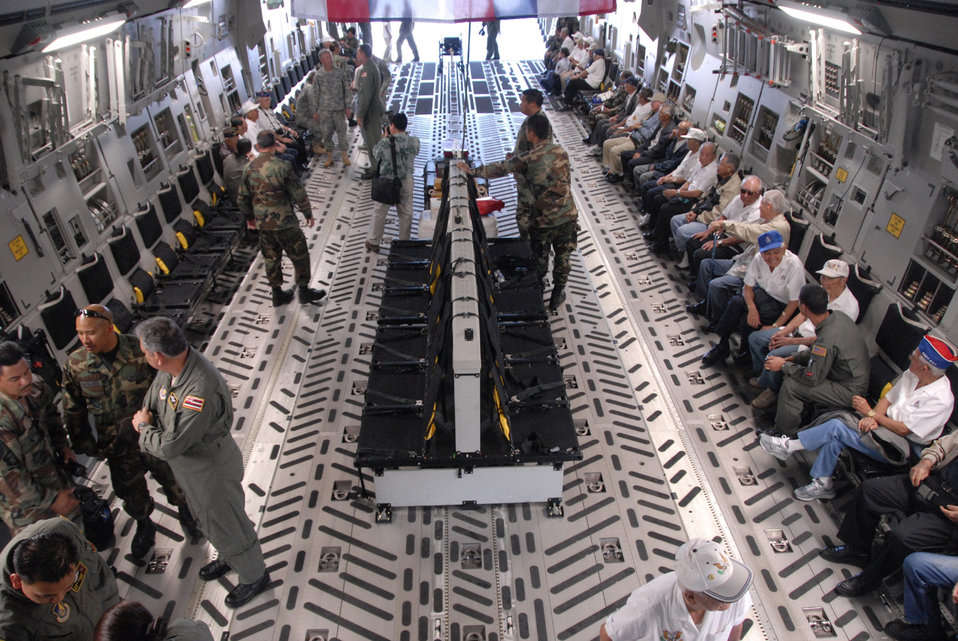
WWII vets fly

Veterans from the 442nd Regimental Combat Team and the 100th Infantry Battalion (seated on the right) get seated and strapped in for along waited incentive flight aboard the